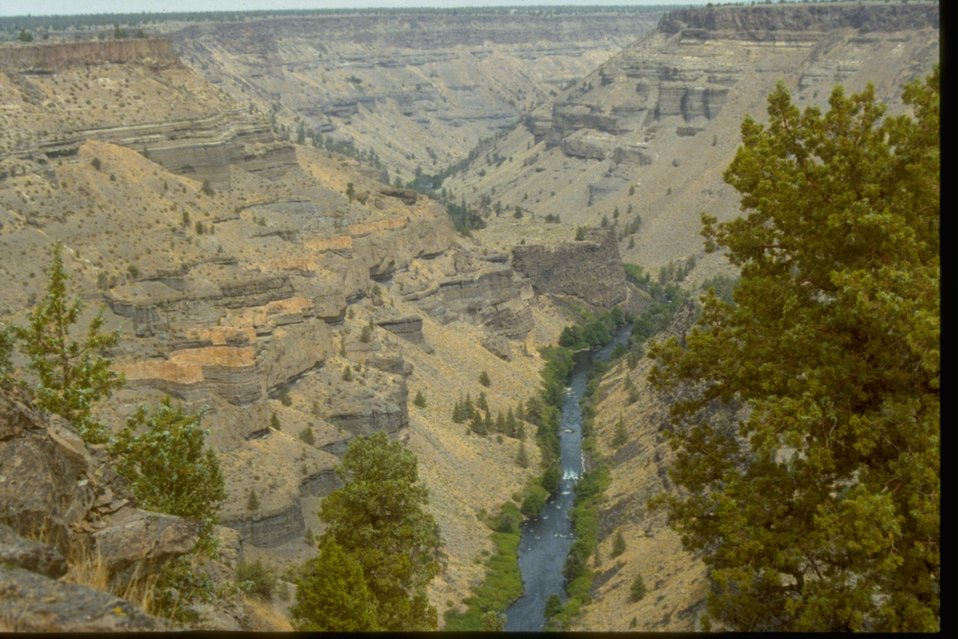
Rim rock view of Steelhead Falls. OR 5-14